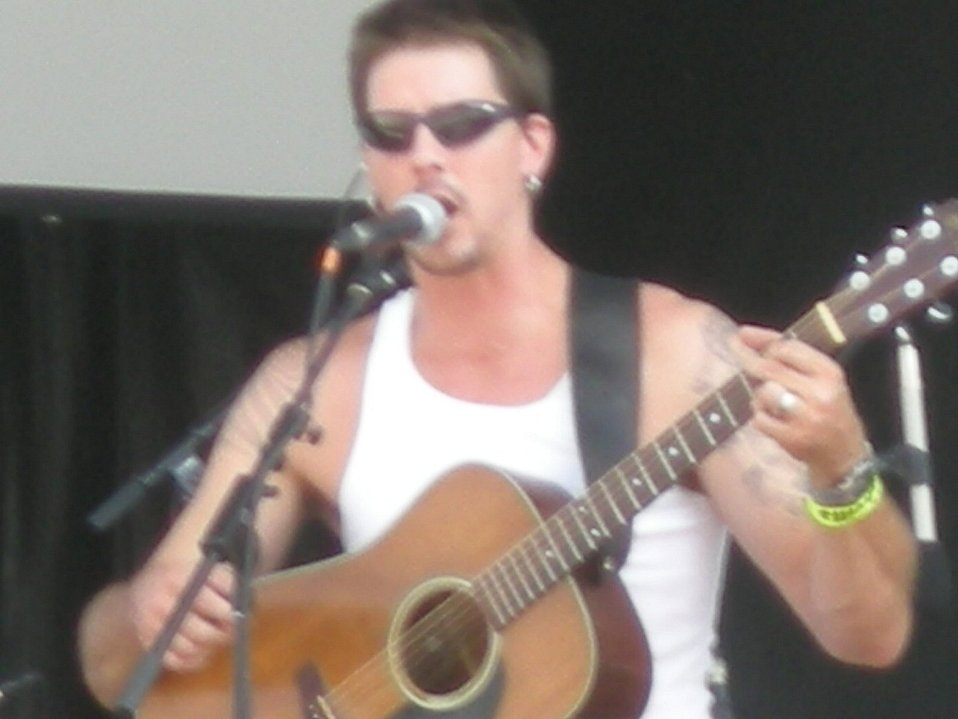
A.P. Hill, Lead Vocal and Acoustic Guitar for Oakhurst. I took this picture at fall hookahville 2007